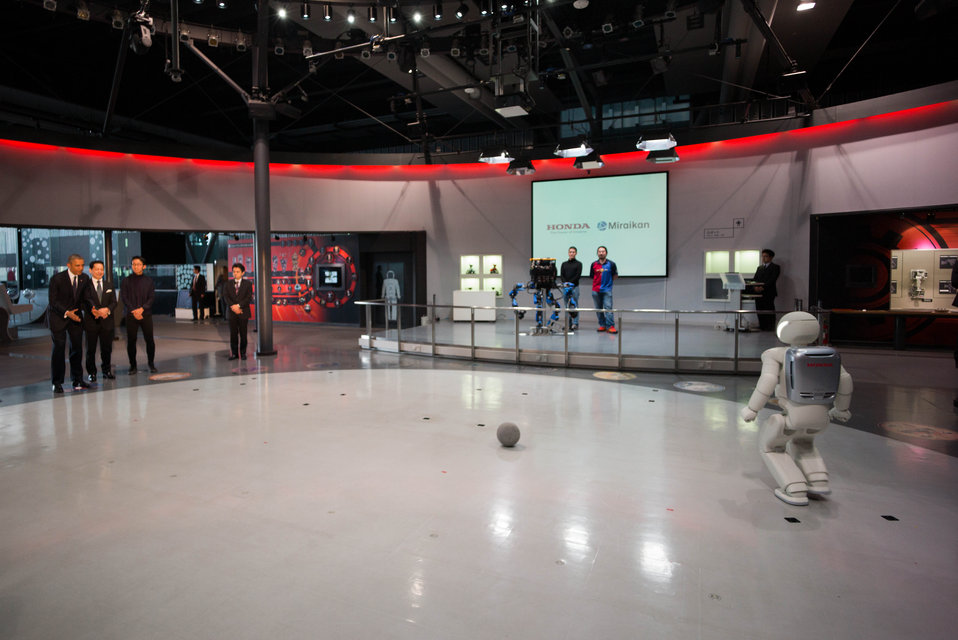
President Obama Watches ASIMO the Humanoid Robot

U.S. President Barack Obama, with Executive Director Mamoru Mohri of the Miraikan (the National Museum of Emerging Science and Innovation) and Japanese students, watches ASIMO the humanoid robot kick a soccer ball during his visit to the museum in Tokyo, Japan, on April 24, 2014.